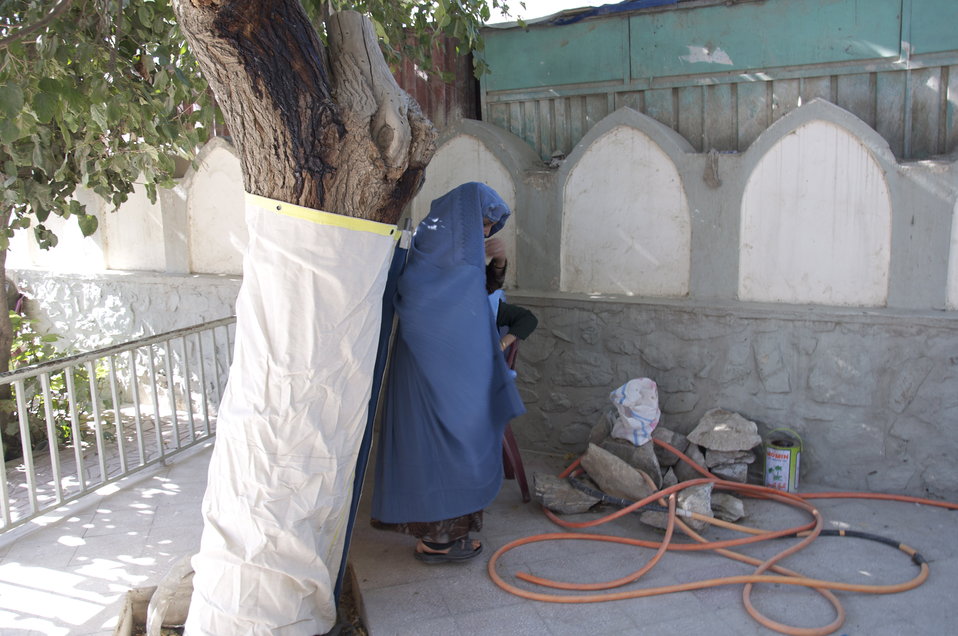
Polling Place in Kabul